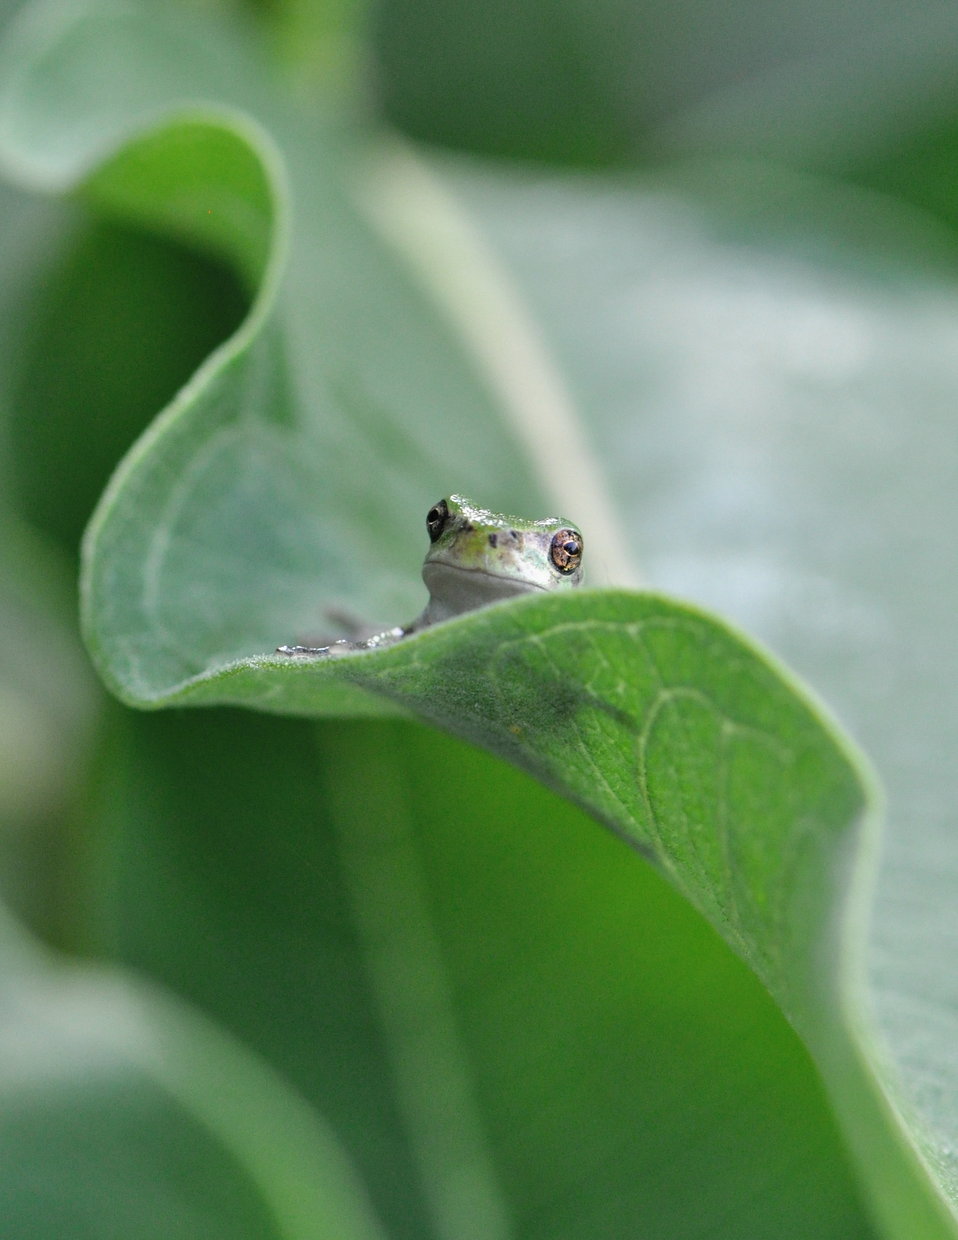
Eastern Gray Treefrog at Horicon National Wildlife Refuge